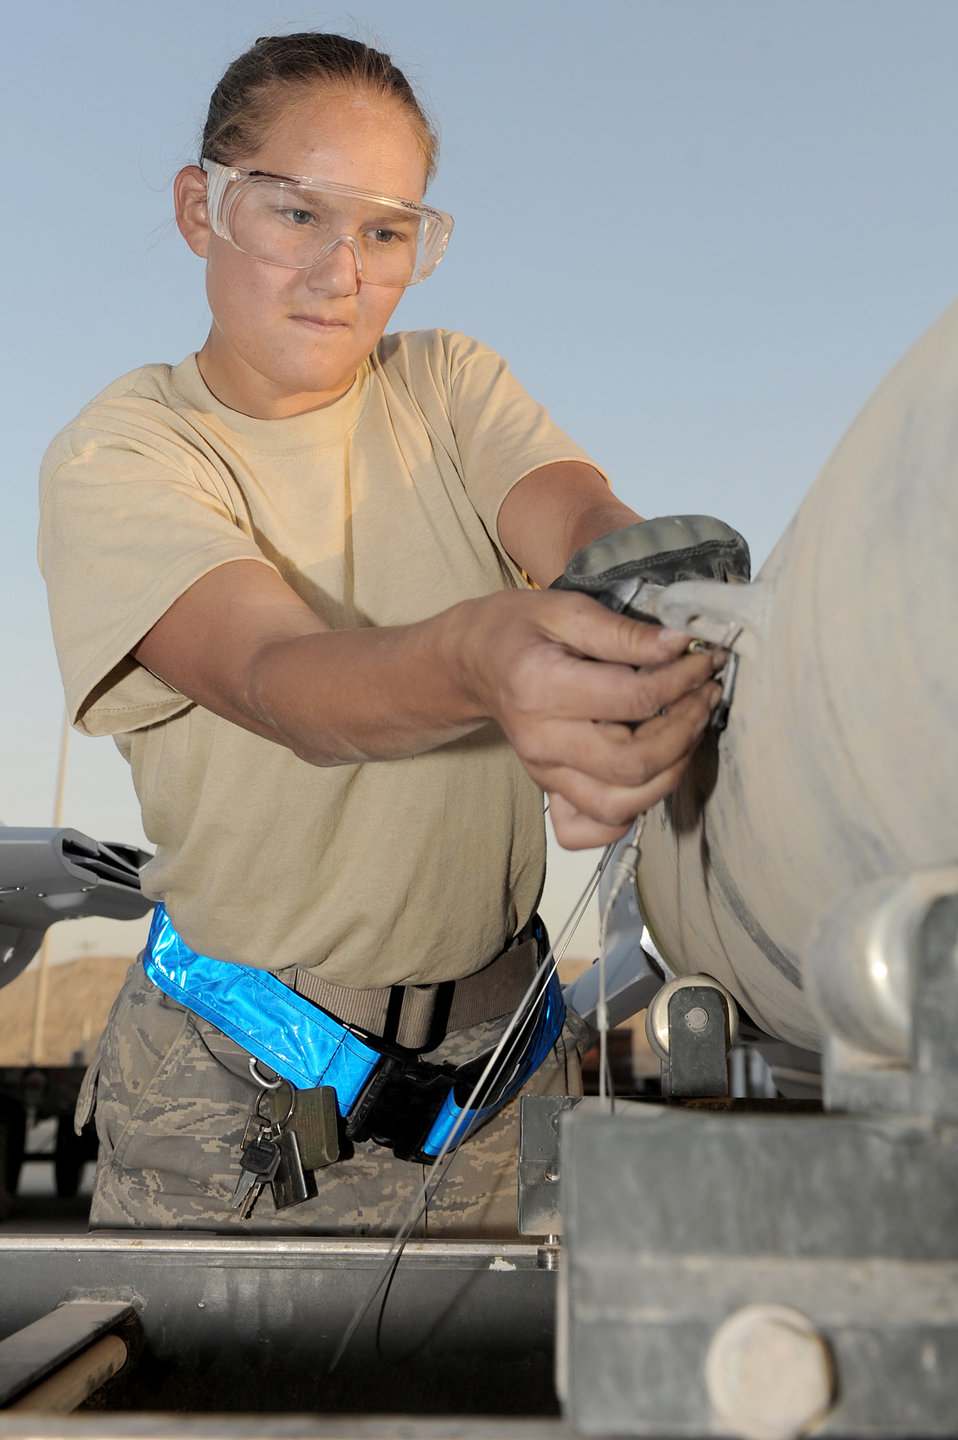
Ammo Airmen

Senior Airman Melissa Bissinger fastens an arming wire to a bomb Aug. 23, 2010, at Kandahar Airfield, Afghanistan. Airman Bissinger is a munitions systems specialist with the 451st Expeditionary Maintenance Squadron Munitions Flight.